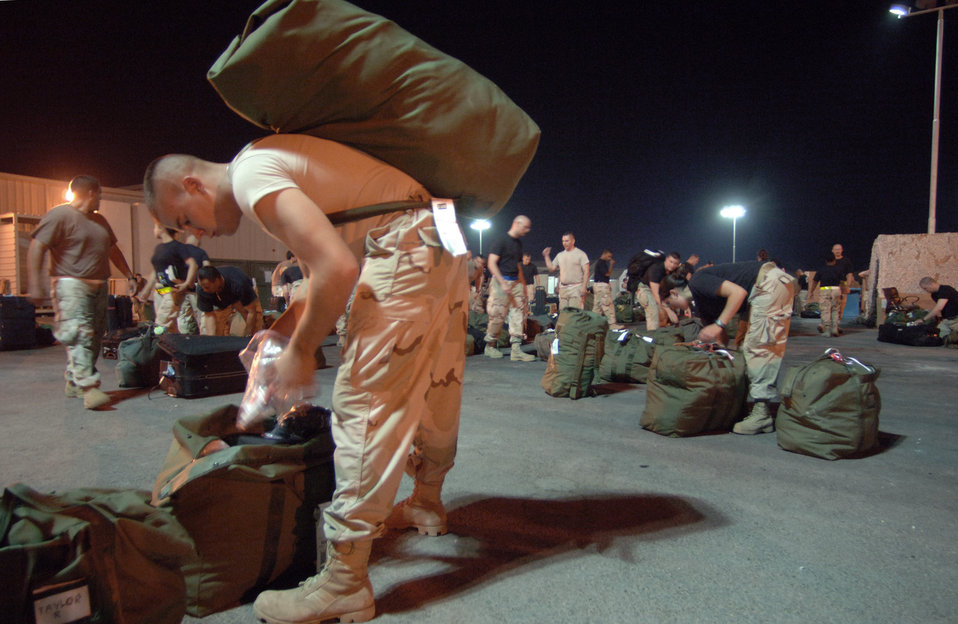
Work begins when boots hit the ground

Shortly after his arrival in Southwest Asia Sept. 17, Airman 1st Class Jeffery Madden removes items he'll need for a 36-hour layover before taking his personal baggage through a customs inspection. Airman Madden is a civil engineer assistant from Fairchild Air Force Base, Wash.